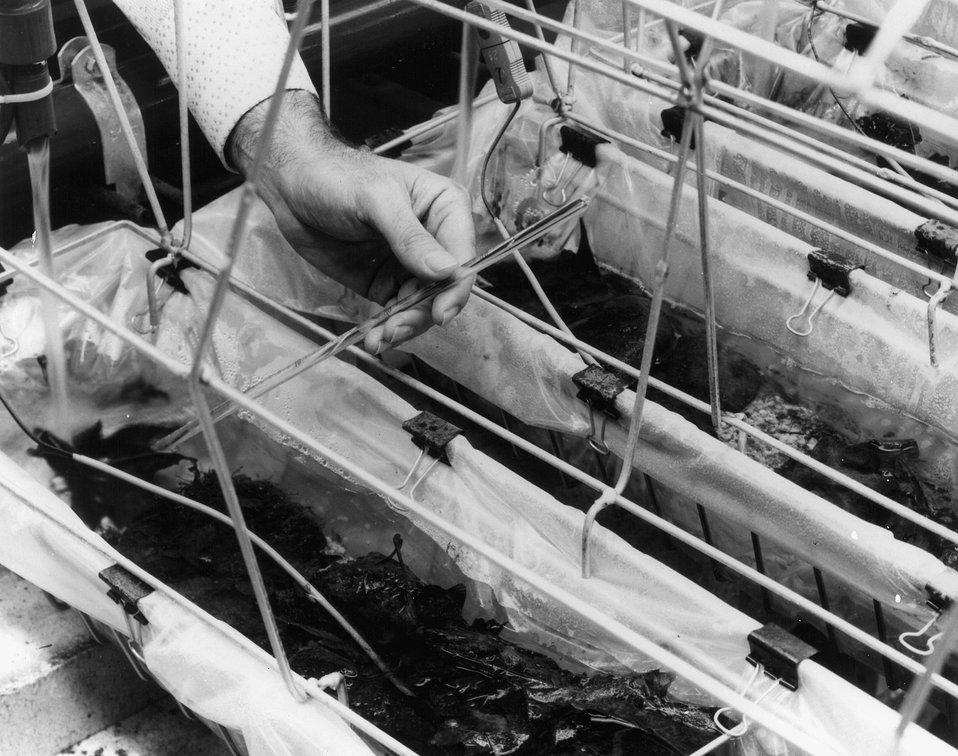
Artificial streams in the Aquatic Ecology Laboratory at the Atomic Energy Commission's Oak Ridge National Laboratory are constantly checked for temperature control. c. 1975